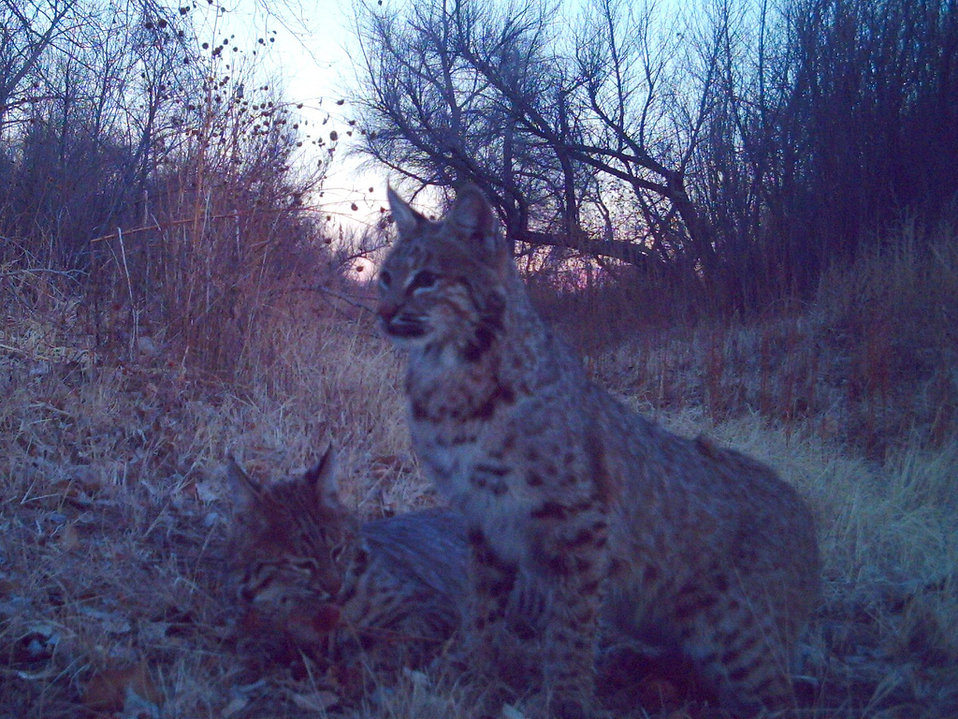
bobcat pair

Bosque del Apache National Wildlife Refuge, NM
Camera trap project by Matthew Farley, Jennifer Miyashiro and James Stuart
Photo made available by J.N. Stuart, Creative Commons